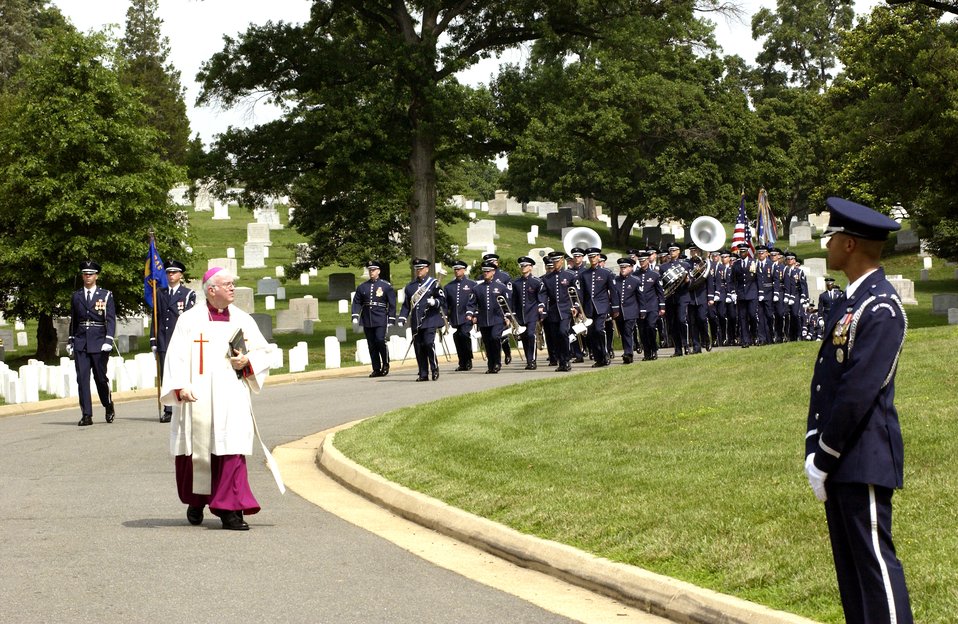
Late space, missile pioneer receives full military honors

ARLINGTON, Va. -- Members of the Air Force Band are part of the funeral procession for retired Gen. Bernard Adolph Schriever. He was buried with full military honors at Arlington National Cemetery on July 12.